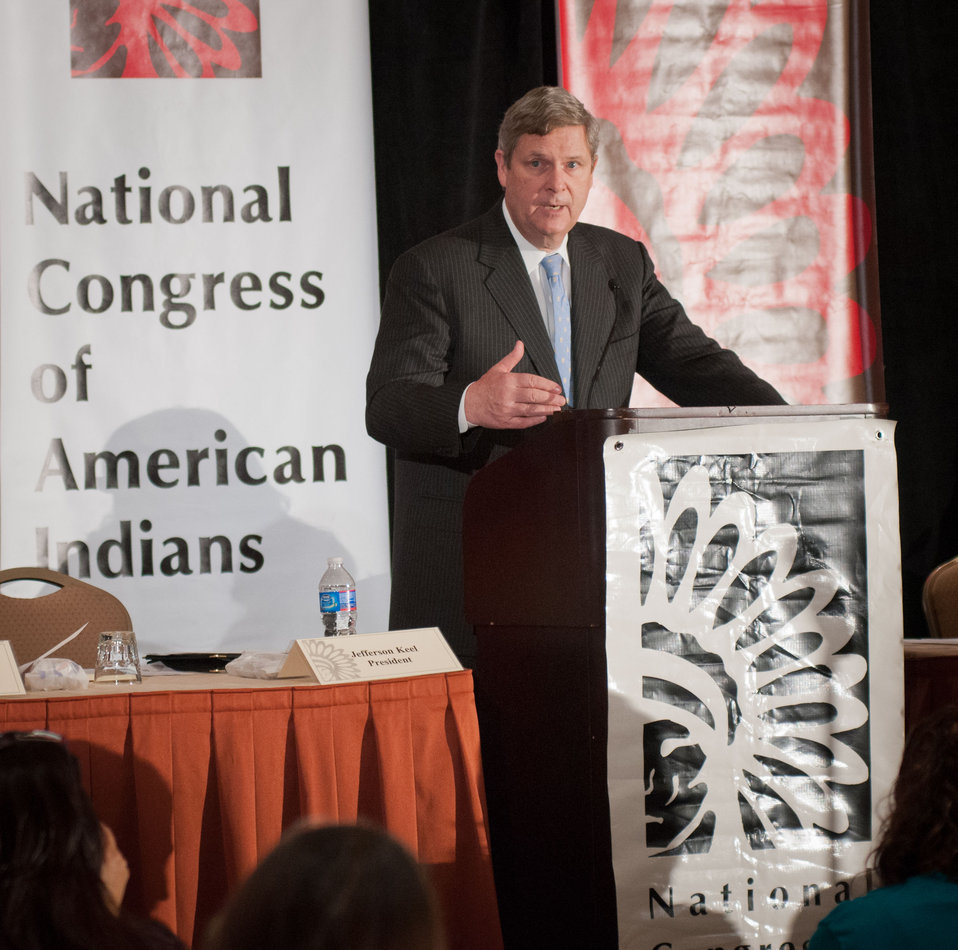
Agriculture Secretary Tom Vilsack today joined tribal leaders from across the nation at the National Congress of American Indians Tribal Nations Legislative Summit in Washington, D. C. on Wednesday March 7, 2012, where he announced investments of $900,000 for positive nutrition education and physical activity habits that can lead to healthier lifestyles. The grants are funded through U.S. Department of Agriculture’s (USDA) Food Distribution Program on Indian Reservations (FDPIR) and will provide nutrition education materials and resources for children and parents in tribal communities in 9 states. USDA chose 17 applicants, located in California, Minnesota, Montana, Oklahoma, South Dakota, Washington, Wisconsin, New Mexico and Alaska to receive FY 2012 funding to develop nutrition education projects that incorporate Dietary Guidelines recommendations within the Native American culture. Secretary Vilsack reiterated USDA’s support to native communities with financial support for electric, broadband and wastewater infrastructure, and provide native families and businesses with home loans and business grants. Secretary Vilsack emphasized USDA’s participation in the First Lady’s Lets Move in Indian Country initiative to combat childhood obesity in tribal communities.